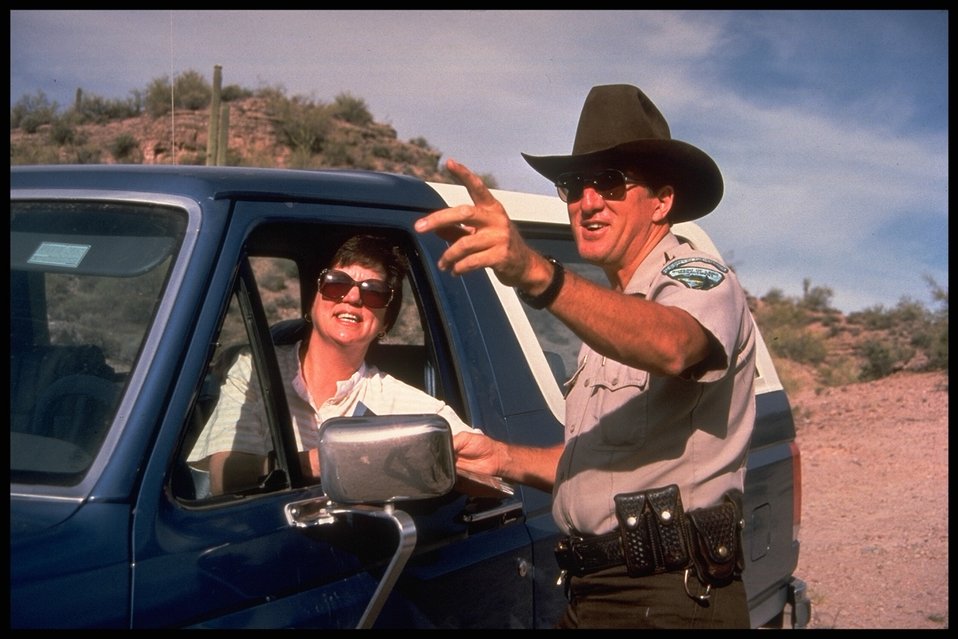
A member of BLM law enforcement shows the way to explorers of Arizona lands.